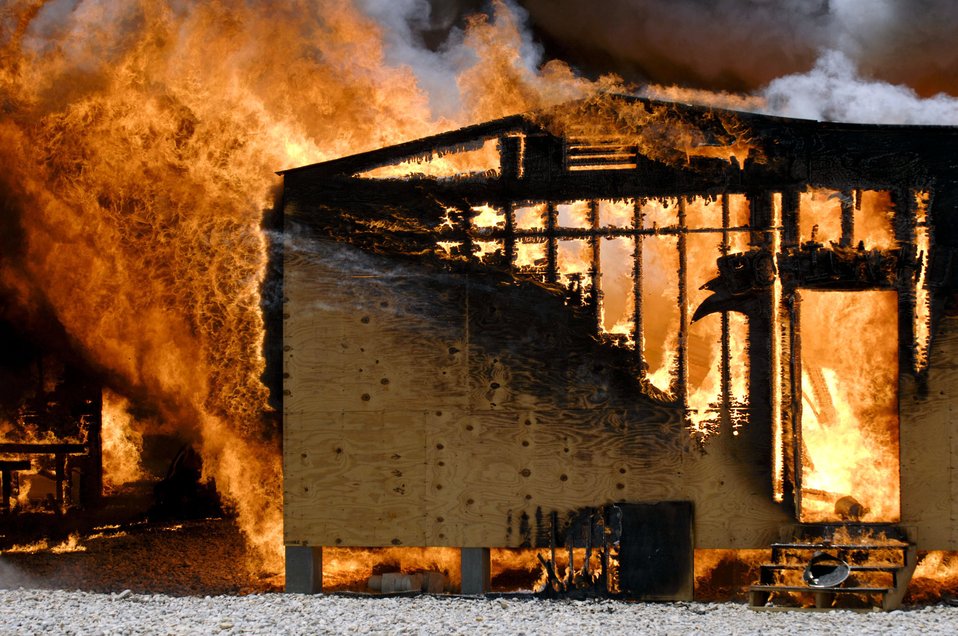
Fire fight in Iraq for the Army

A fire burns out of control in the Army Motor Pool June 19 on Camp Adder, Iraq. Due to munitions contained in the building and no potential for loss of life, firefighters from the 407th Expeditionary Civil Engineer Squadron at Ali Air Base, Iraq, switched to defensive operations for the blaze using six trucks to keep it under control and confined to the building.